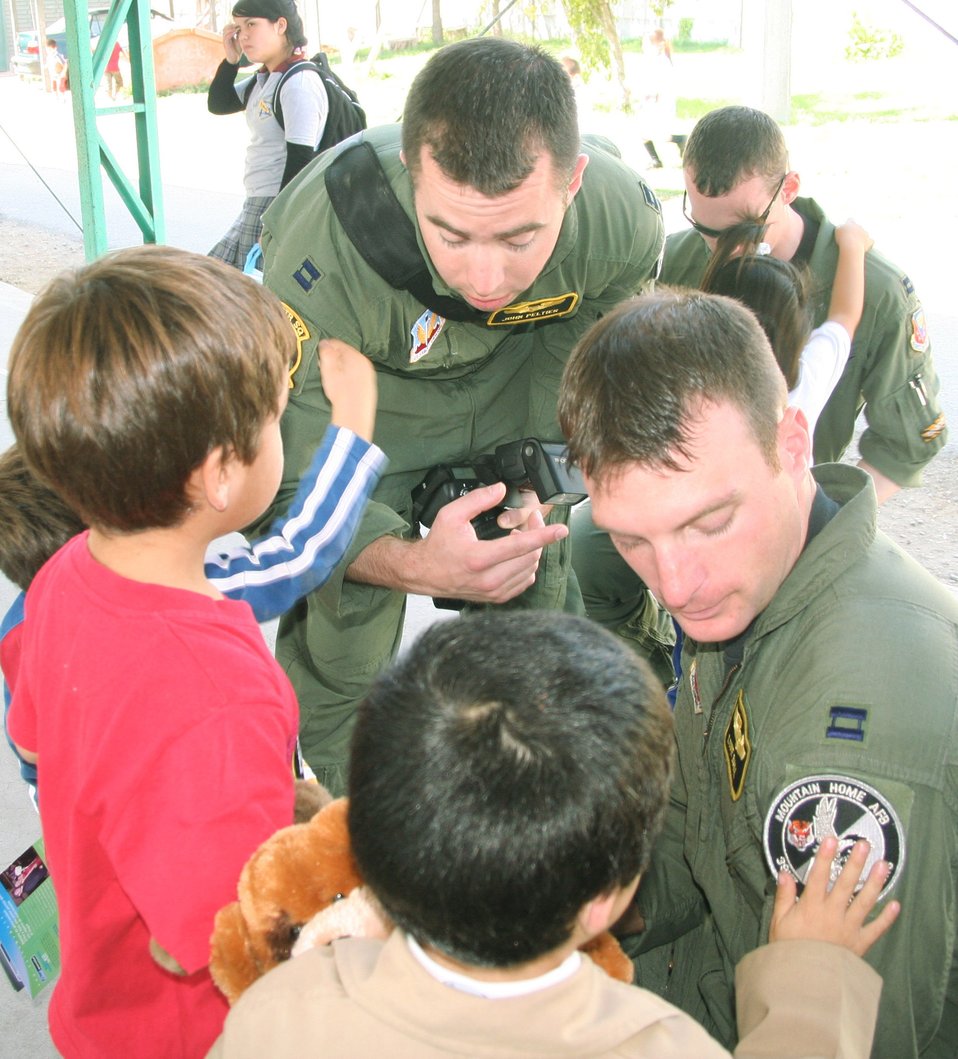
Airmen visit Chilean orphanage

Capts. John Peltier and Luke Ball show off their squadron patches to Chilean orphans at Koinomadelfia Orphanage April 3 west of Santiago, Chile. The captains supported the largest South American air show, FIDAE, where they showcased F-15E Strike Eagles to international audiences. Captains Peltier and Ball are assigned to the 391st Fighter Squadron from Mountain Home Air Force Base, Idaho.